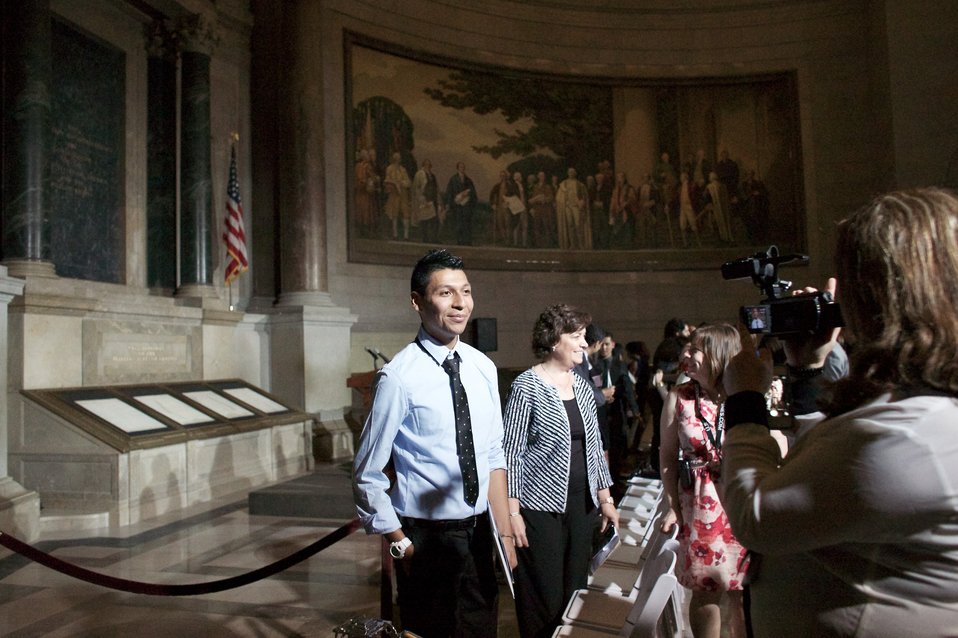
Naturalization Ceremony with Michelle Obama